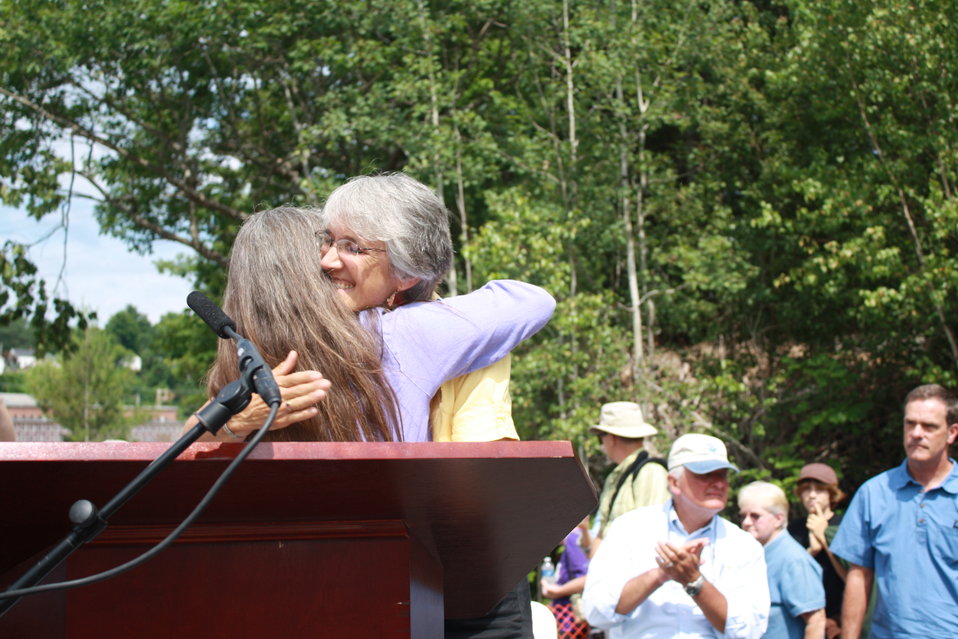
Veazie Dam Removal

Laura Rose Day, Executive Director of the Penobscot River Restoration Trust, hugs Lisa Pohlman, Executive Director for Natural Resources Council of Maine.